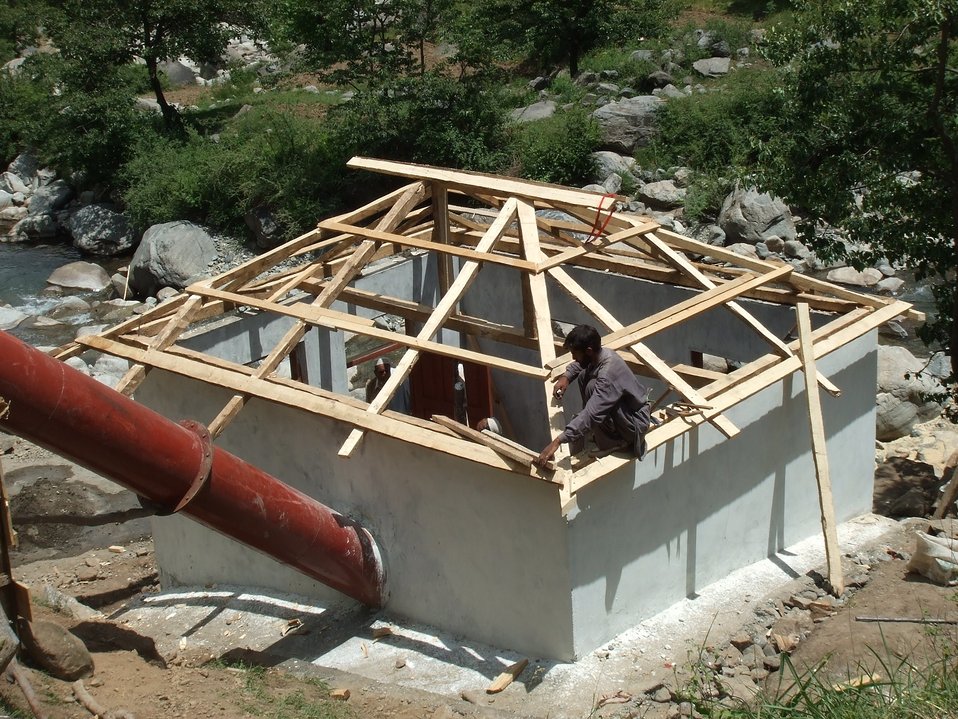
Site

A new wave of energy has swept a remote village of Matta Tehsil. Children are excited, elders relieved. Electricity had lit their dark houses after over six decades of independence and connected them to the modern world.
“We can now watch cartoons on the TV just like all the other children,” said an excited child during the inauguration of a micro-hydropower station on Saturday.
The community-based power station, which will supply electricity to about 110 households in Swatai village, has been installed with the assistance of Small Grants Ambassador Fund Program of the USAID in collaboration with the Swat Participatory Council (SPC).